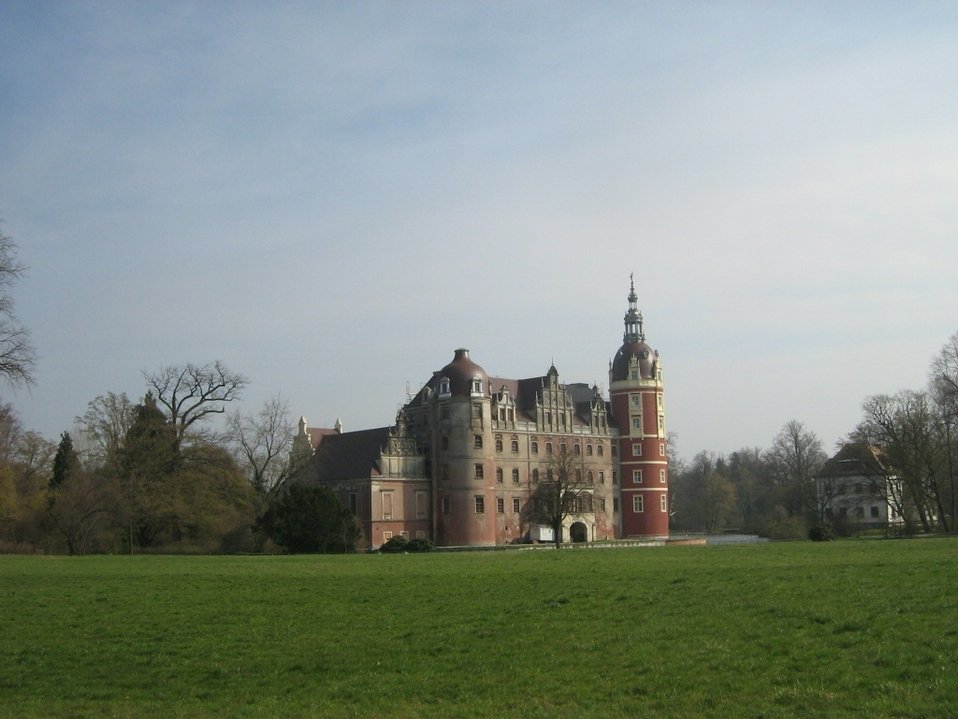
Deutsch: Das Neue Schloss Muskau in Bad Muskau, Sachsen. The New Palace Muskau (Bad Muskau, Saxony, Germany).